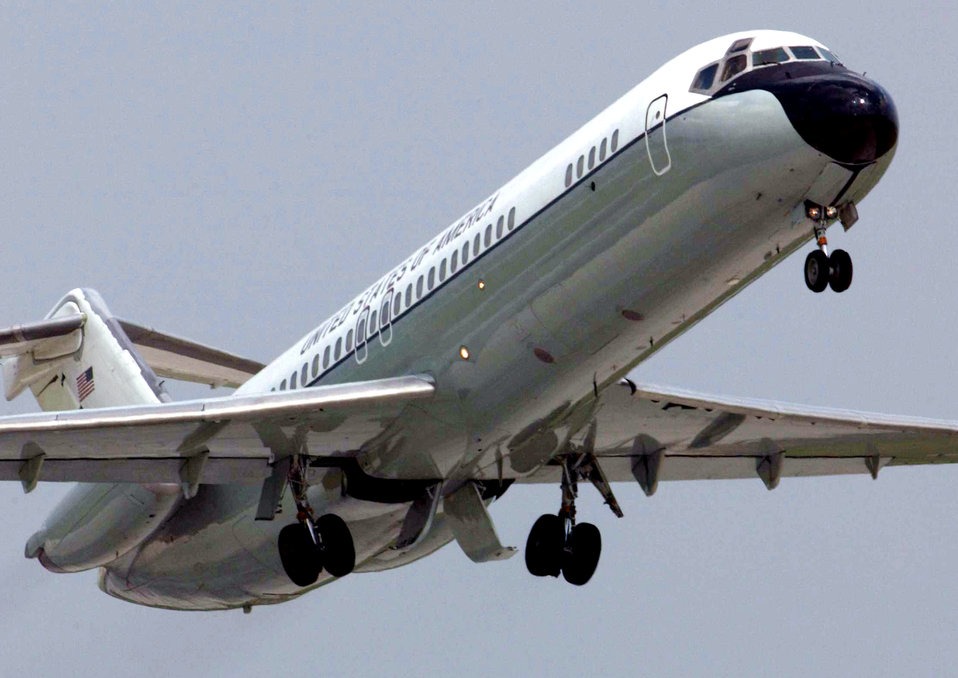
Farewell old friend

YOKOTA AIR BASE, Japan -- A C-9 Nightangle from the 30th Airlift Squadron, takes off for the final time after a farewell ceremony here. The C-9, which has served as the premier medical evacuation aircraft for the Air Force for 35 years, was retired in July 2003.